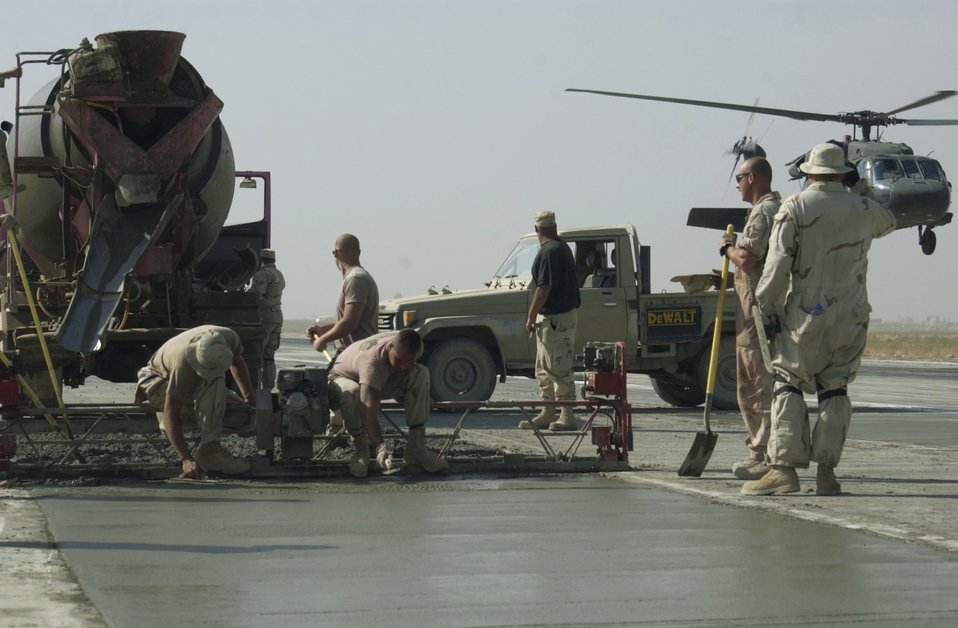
Paving the runway

BAGRAM AIR BASE, Afghanistan -- Airmen of the 455th Civil Engineer Flight work together to pour the last load of concrete for the runway here as a Blackhawk helicopter flies by on the other half of the runway.